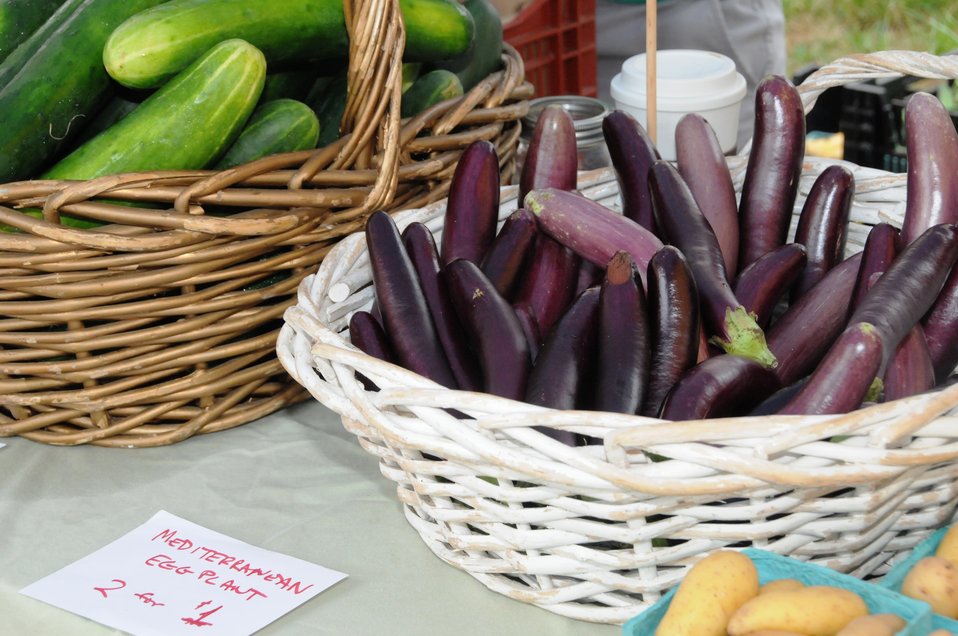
Mediterranean Eggplant

Eggplant at the Columbia Heights Community Marketplace.